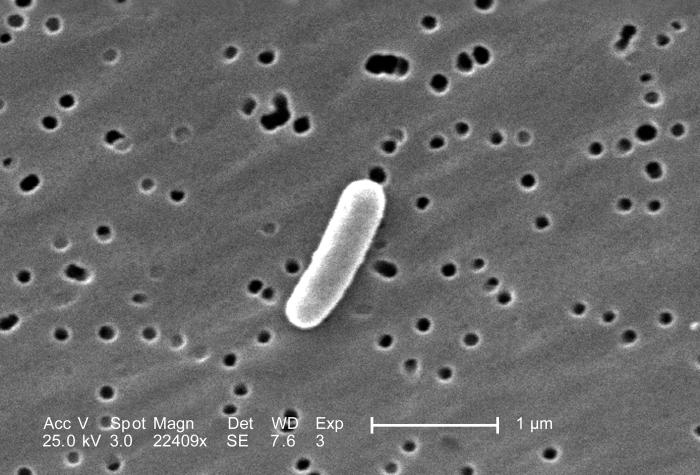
At a very high magnification of 22,409X, this scanning electron micrograph (SEM) revealed some of the morphologic details displayed by a single Gram-negative Escherichia coli bacterium. This bacterium was a member of the strain, 0:169 H41 ETEC (Enterotoxigenic E. coli).Enterotoxigenic E. coli, a common cause of bacterial diarrhea...